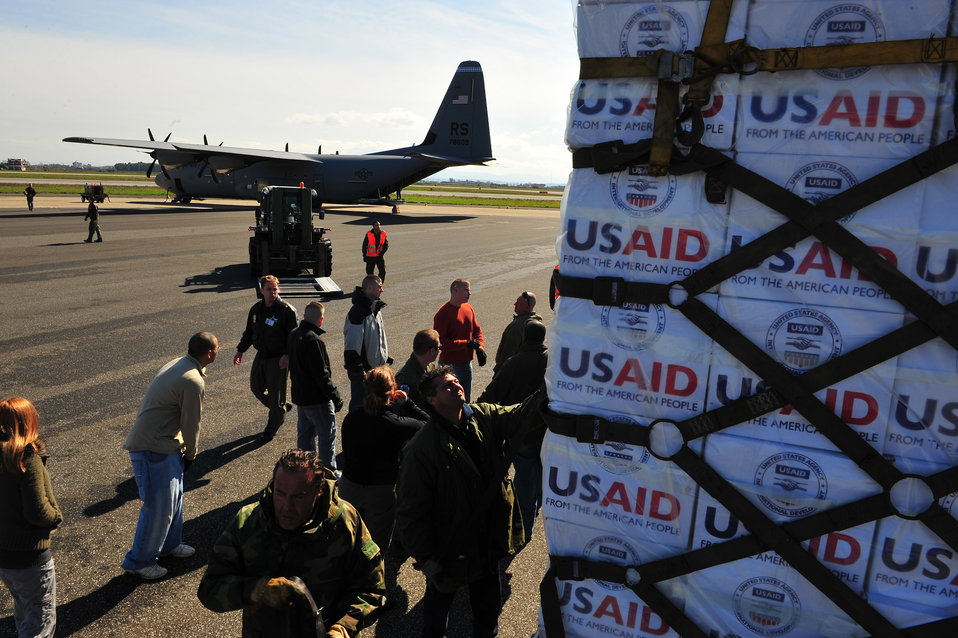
U.S. Airmen Load Blankets, Tarps, and Water Containers Onto Aircraft

U.S. Airmen, from the 435th Air Mobility Squadron out of Ramstein Air Base, load blankets, tarps, and water containers onto C-130 aircraft in Pisa, Italy, on March 4, 2011. These aircraft will then fly these supplies to Tunisia. The U.S. Government is working intensely with the International community to meet the humanitarian needs of the Lybian people and others in the country who fled across the borders. [Staff Sgt. Brendan Stephens photo/ U.S. Army photo]